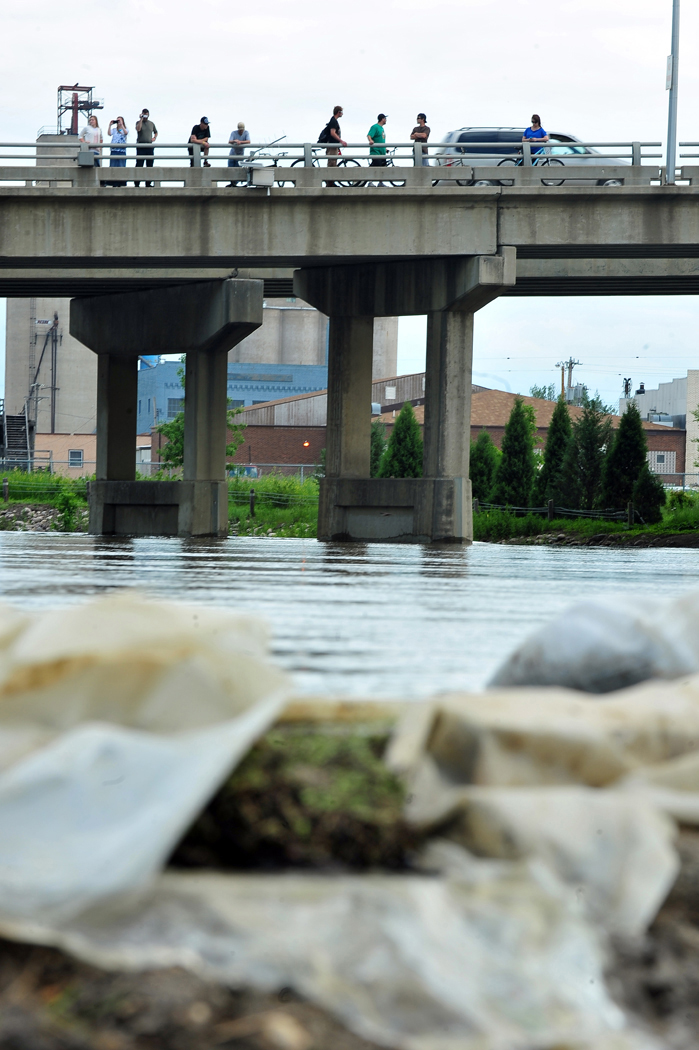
Minot Airmen fight flood

The citizens of Minot, N.D., look on June 22, 2011, as the Souris River swells in size. The flooding forced more than 11,000 residents to evacuate. The flood also is affecting nearly 1,000 Airmen from nearby Minot Air Force Base.